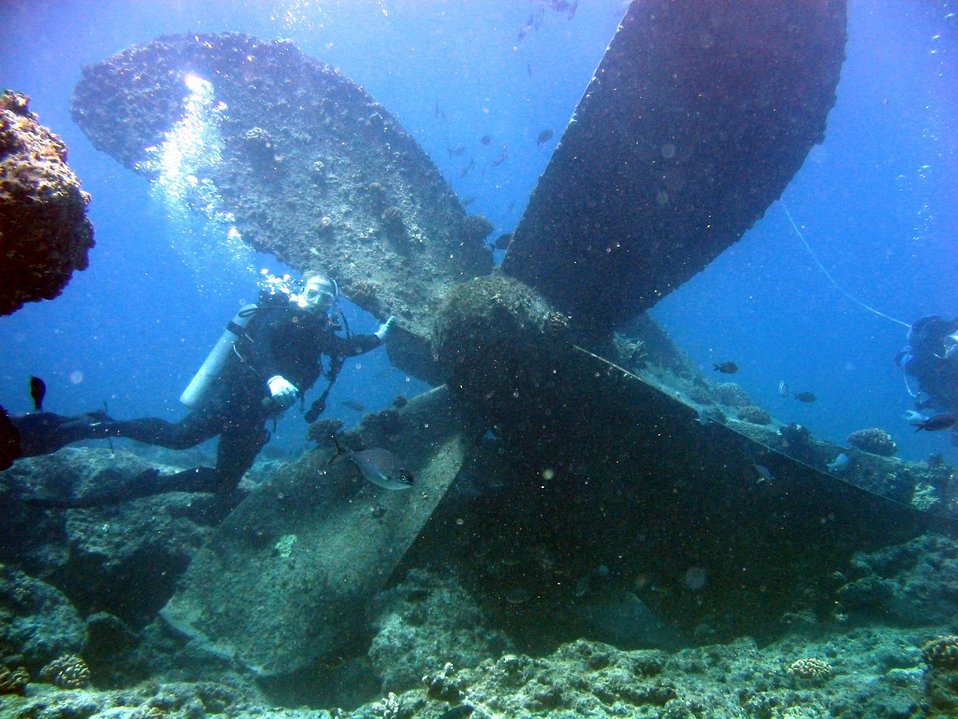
Modern ship wreck at Pearl and Hermes Reef. Propeller.